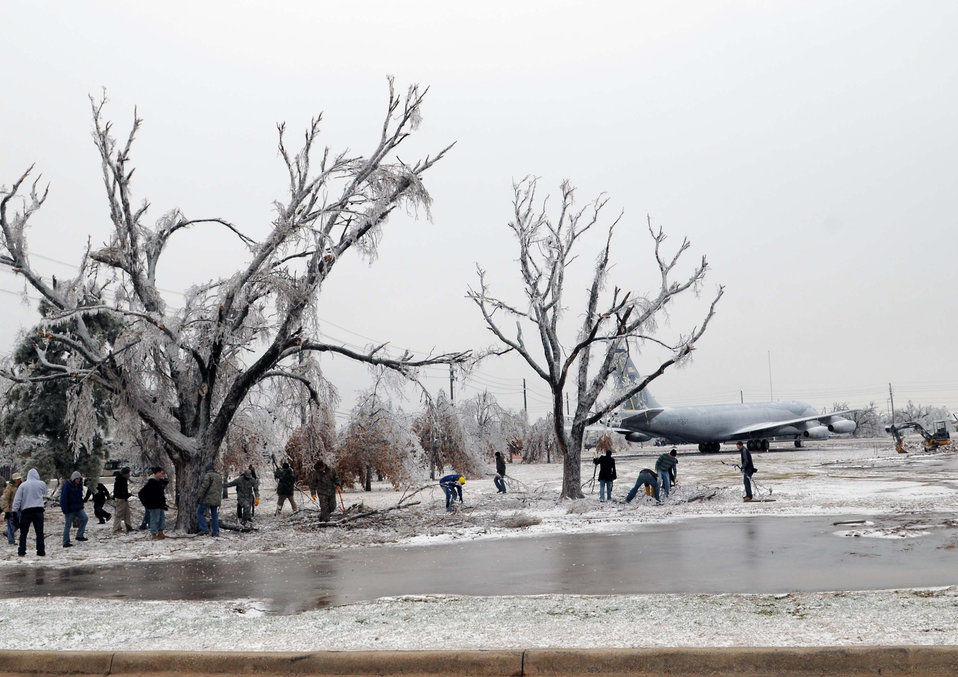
Altus training operations begin to recover from ice storm

After an ice storm hit, volunteers work to clean up the fallen tree limbs Jan. 30, 2010 at the Wings of Freedom Park at Altus Air Force Base, Okla.